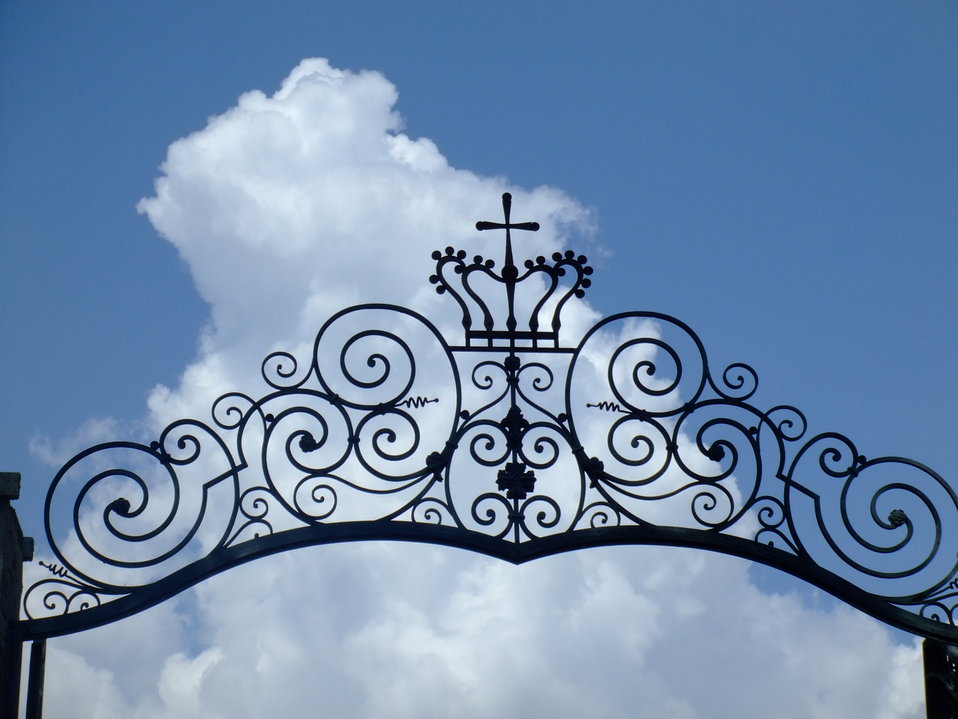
ქართული: დადიანების მუზეუმის კომპლექსის შესასვლელი კარის ფრაგმენტი